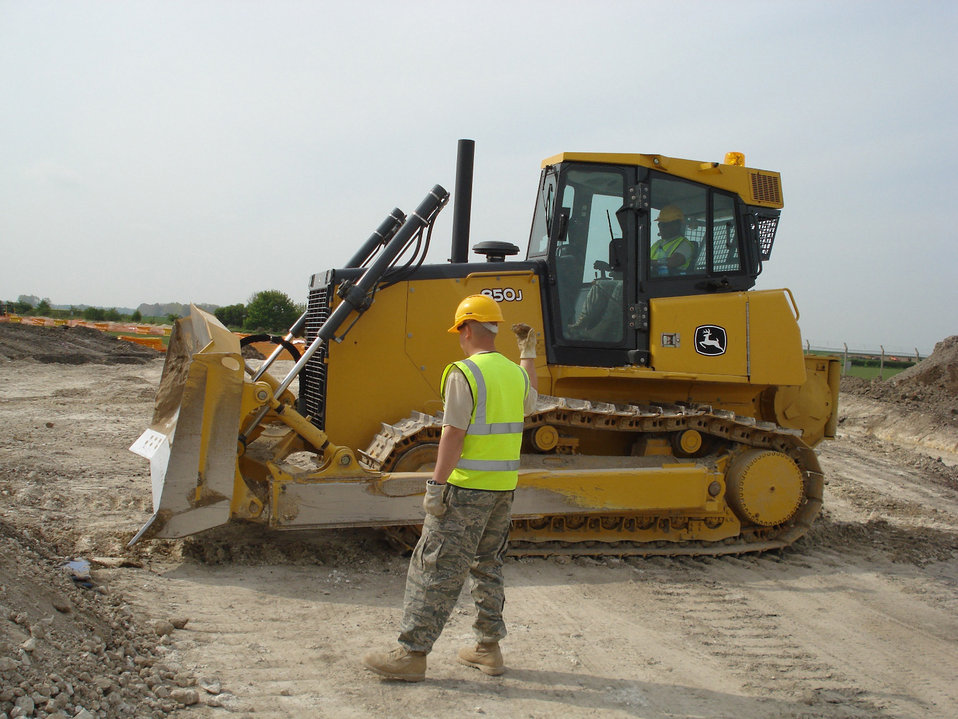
Civil engineers bring unique capability to USAFE

Tech. Sgt. Lamont Hall and Staff Sgt. Bobby Martin operate a bulldozer during construction of a road on the installation in July at Royal Air Force Feltwell, England. Sergeant Hall is the 86th Construction and Training Squadron Military Construction Flight NCO in charge of electrical systems, and Sergeant Martin is a 86th CTS/MCF pavements and equipment operator.